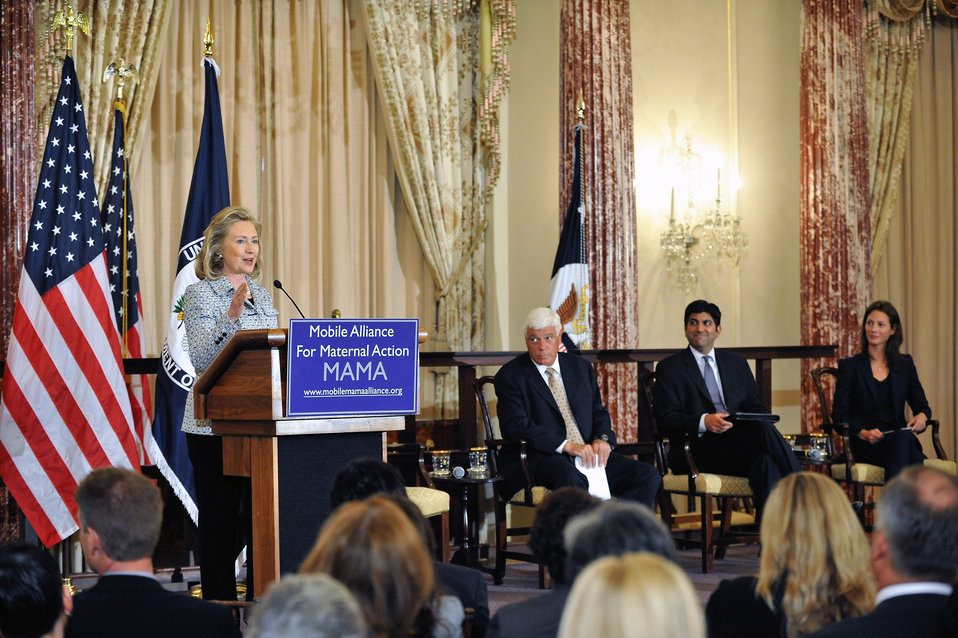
Secretary Clinton Unveils the Mobile Alliance for Maternal Action Partnership

U.S. Secretary of State Hillary Rodham Clinton unveils the Mobile Alliance for Maternal Action (MAMA) Partnership, at the U.S. Department of State in Washington, D.C., on May 3, 2011.